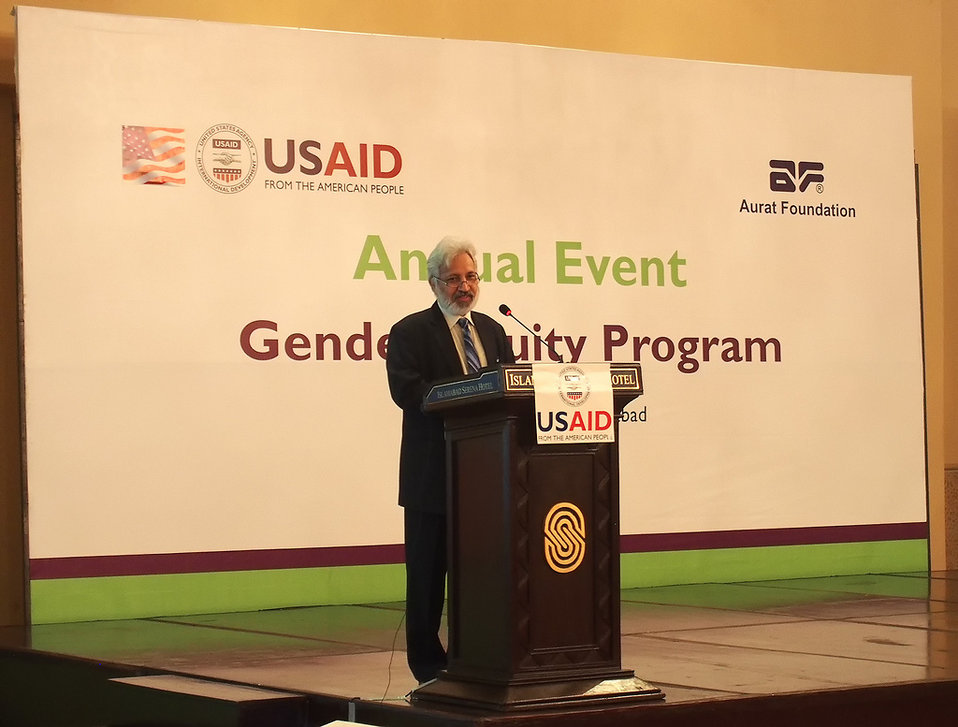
987Gender Equity Program, Pakistan

USAID and Aurat Foundation annual event in Islamabad, Sept. 20, 2013